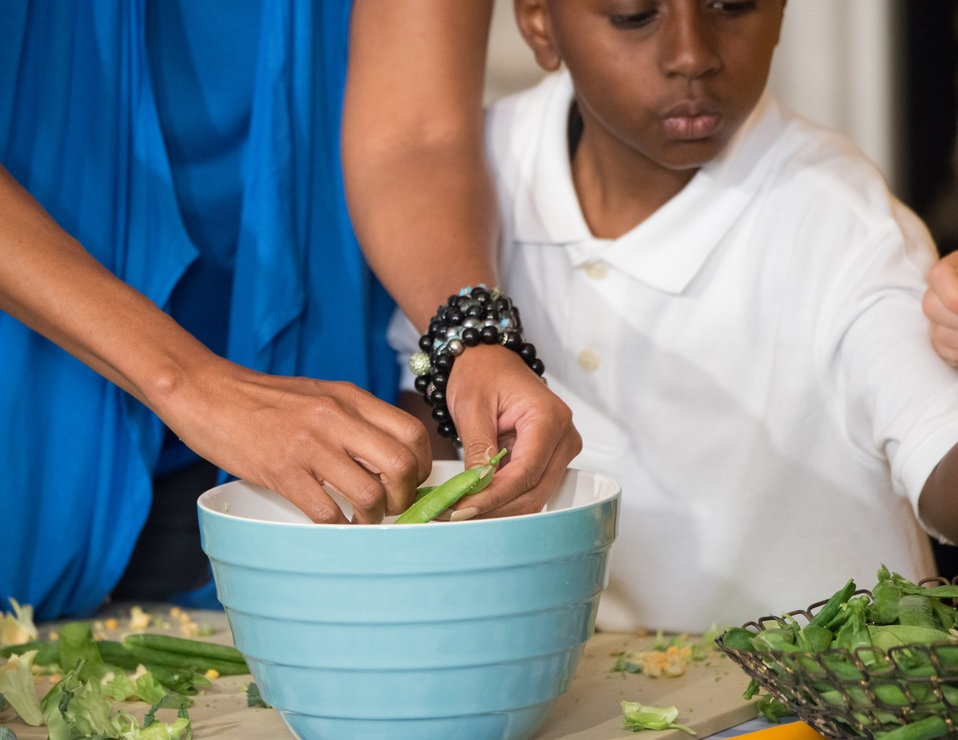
First Lady Michelle Obama and Washington, D.C. students from Cleveland Elementary School, Friendship Public Charter School, Kimball Elementary School, Bancroft Elementary School, and Harriet Tubman Elementary School prepare lunch from this year’s summer crop of vegetables from the White House Kitchen garden in the State Dining Room of the White House in Washington, D.C. on Thursday, Jun. 12, 2014. The students, who helped plant the garden in the spring, made lunch with the help of White House chefs and visiting school nutrition directors from Orlando, FL, Dallas, TX, and West Virginia.